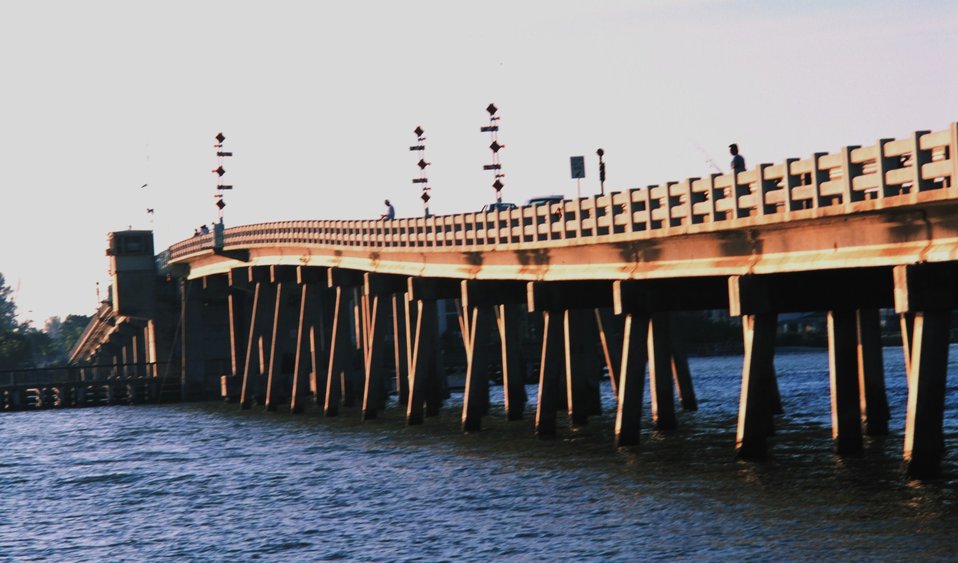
Fishing off a bridge in the waters next to Lovers Key State Recreational Area